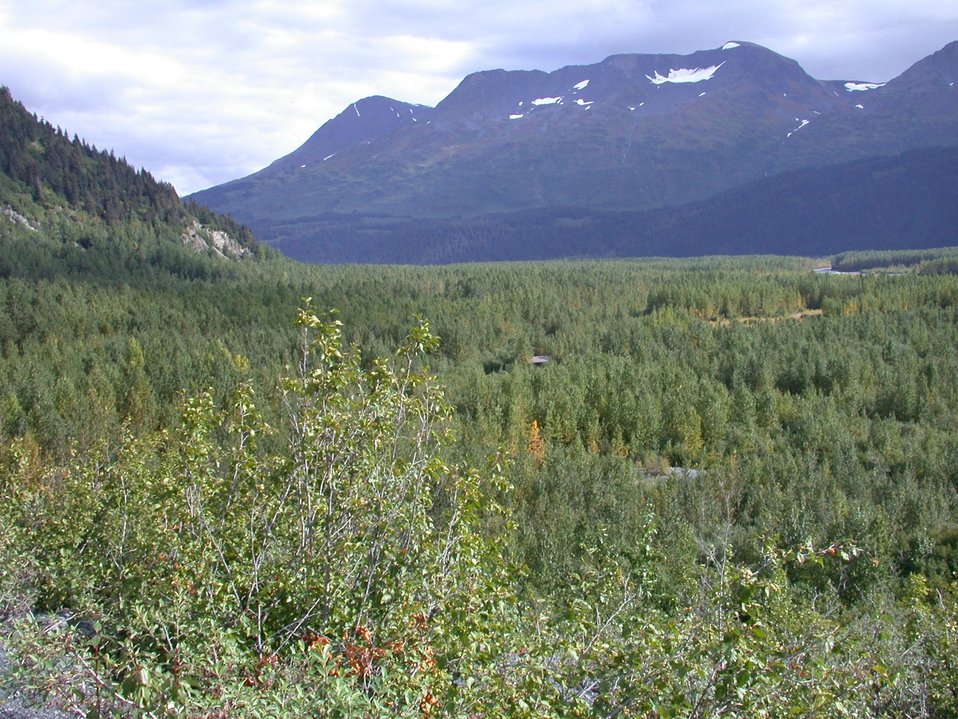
Moose Pass area between Seward and Anchorage.